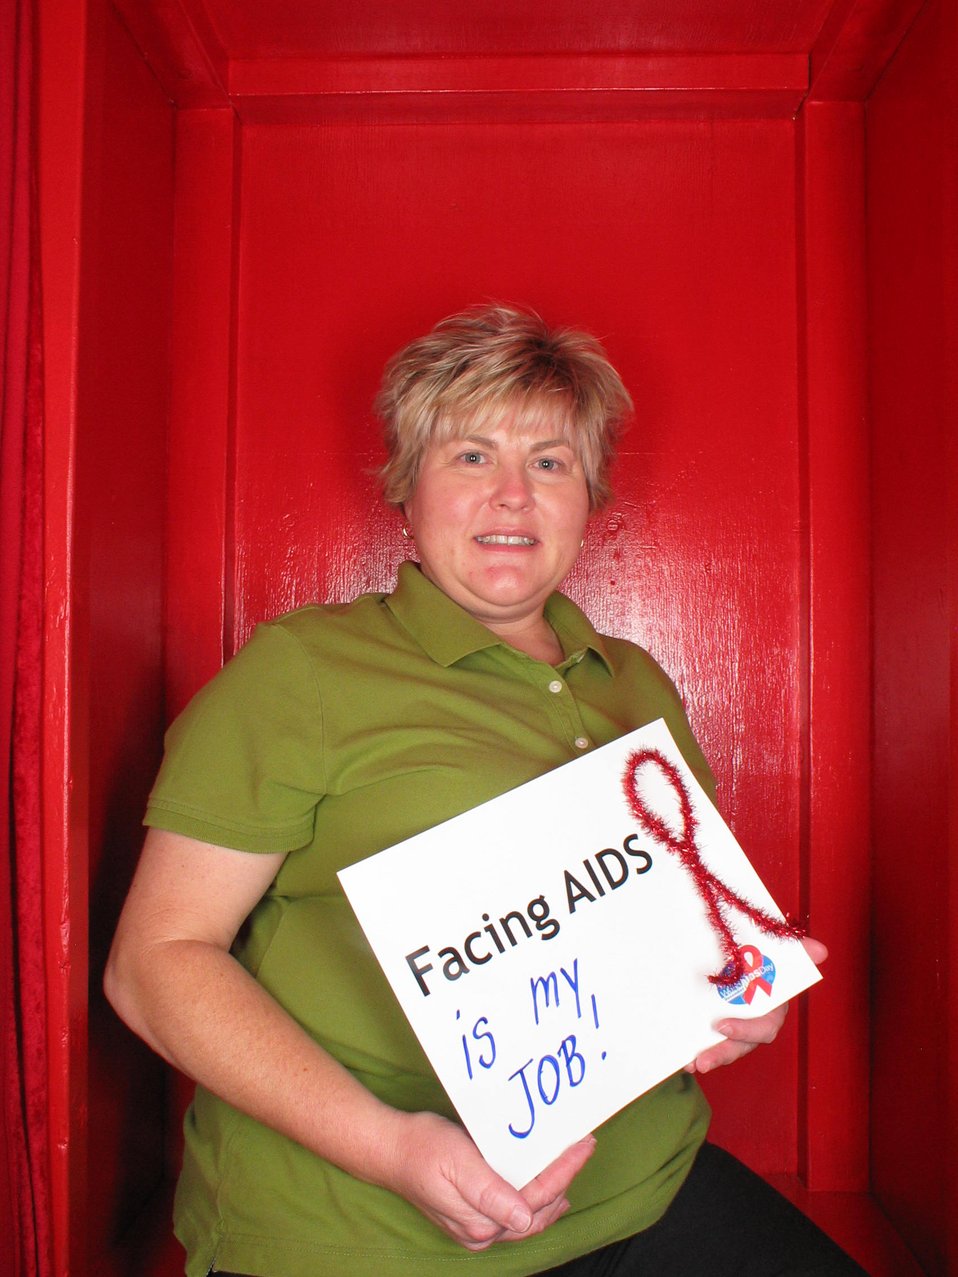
Facing AIDS is my job!